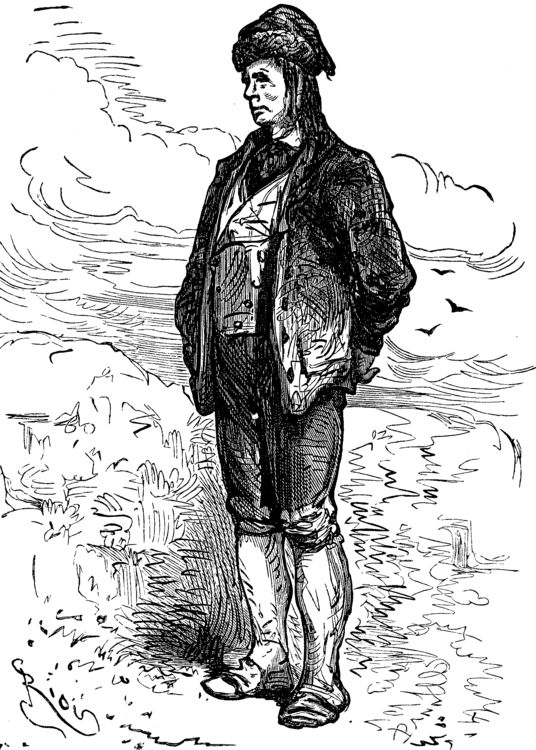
An ilustration from the novel 'Journey to the Center of the Earth' by Jules Verne painted by Édouard Riou. Polski: Ilustracja powieści Juliusza Verne'a 'Wyprawa do wnętrza Ziemi' autorstwa Édouarda Riou. Français : 'Voyage au centre de la Terre', Édouard Riou. Français : Hans, personnage grave, flegmatique et silencieux.